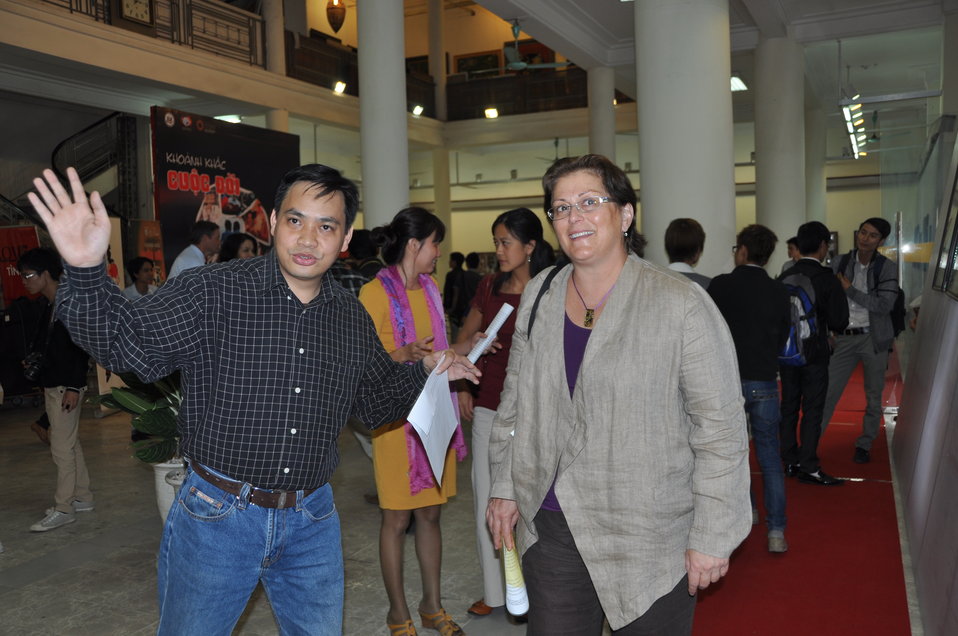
Moments in Life Exhibit: PEPFAR